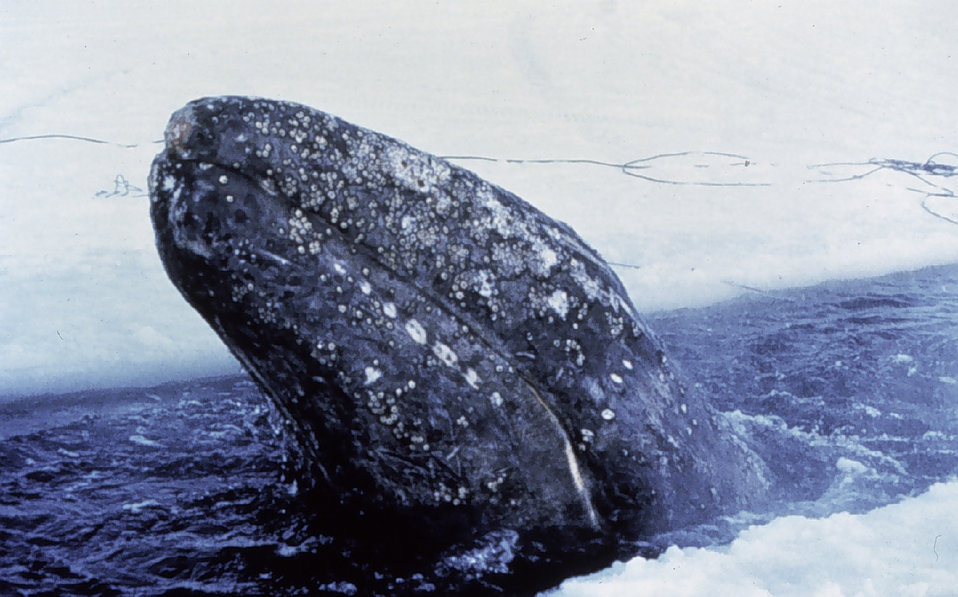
Gray whale trapped in the ice in the Bering Sea. Joint American-Russian effort ultimately saved 2 out 3 trapped whales.